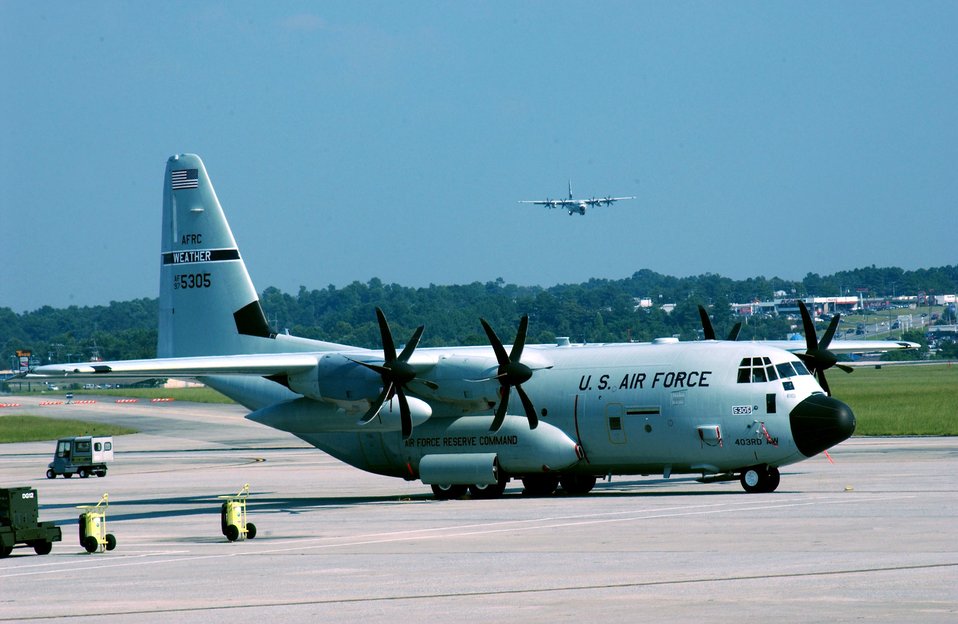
Hurricane Hunters rebound, gear up for next storm

DOBBINS AIR RESERVE BASE, Ga. - An Air Force Reserve Command WC-130 Hercules sits on the runway here. The Hurricane Hunters from the 53rd Weather Reconnaissance Squadron evacuated their home at Keesler Air Force Base, Miss., before Hurricane Katrina slammed the Gulf Coast. Despite their own personal losses, the reservists continued to track tropical storms in the Caribbean.